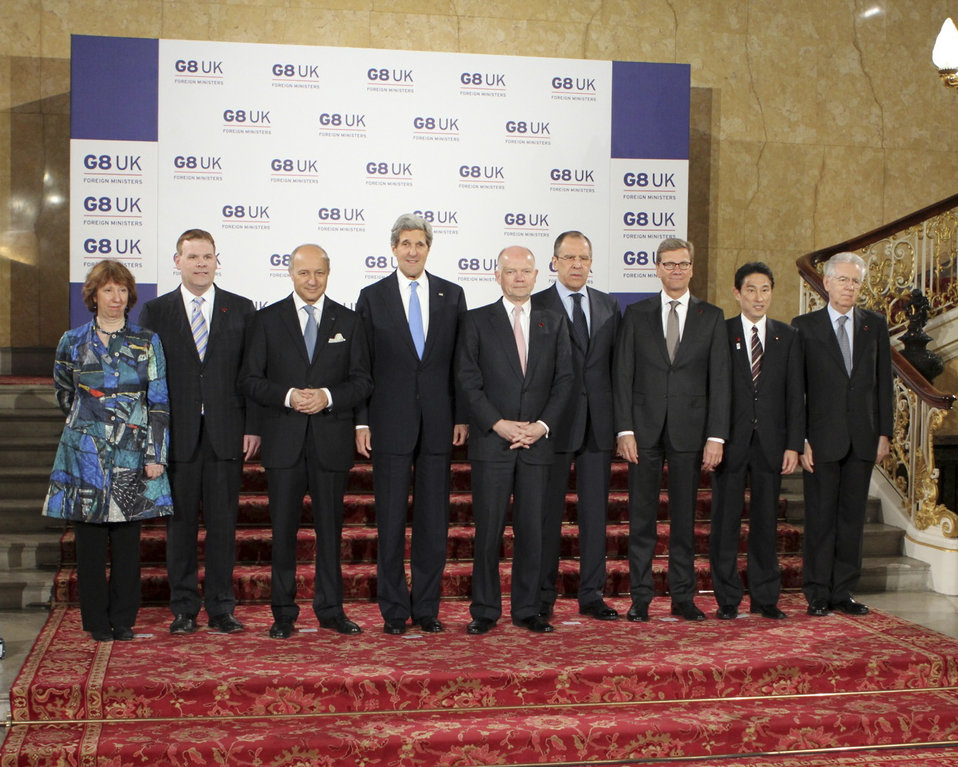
Secretary Kerry Poses for a Photo With G8 Counterparts

U.S. Secretary of State John Kerry poses for a photo with G8 counterparts for the G8 Foreign Ministers Meeting in London, United Kingdom, on April 11, 2013.